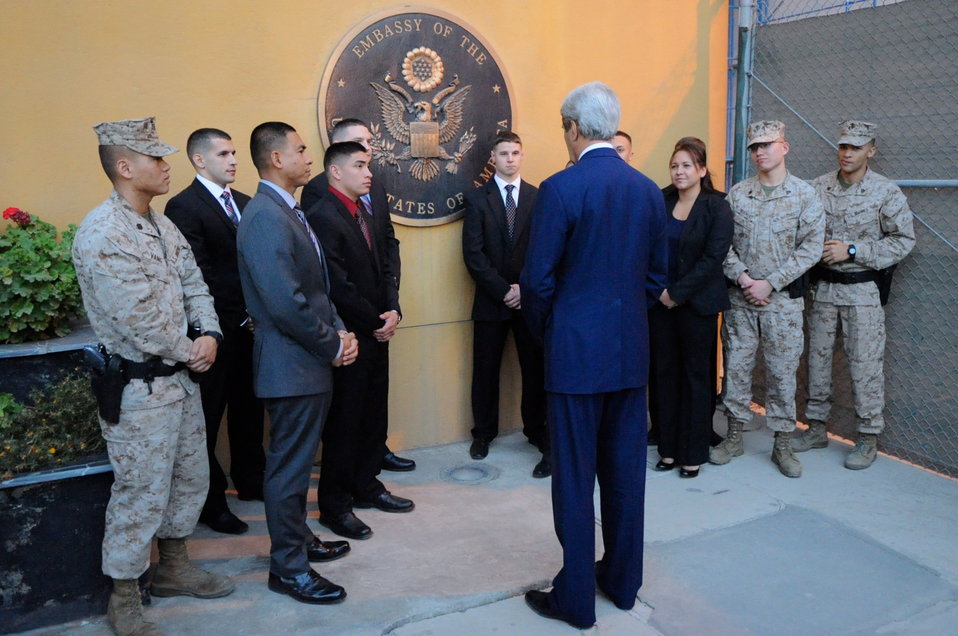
Secretary Kerry Meets Embassy Kabul Marine Guards

U.S. Secretary of State John Kerry meets members of the Marine Security Guard detachment at Embassy Kabul, during a visit to Afghanistan for meetings with President Hamid Karzai on October 12, 2013.